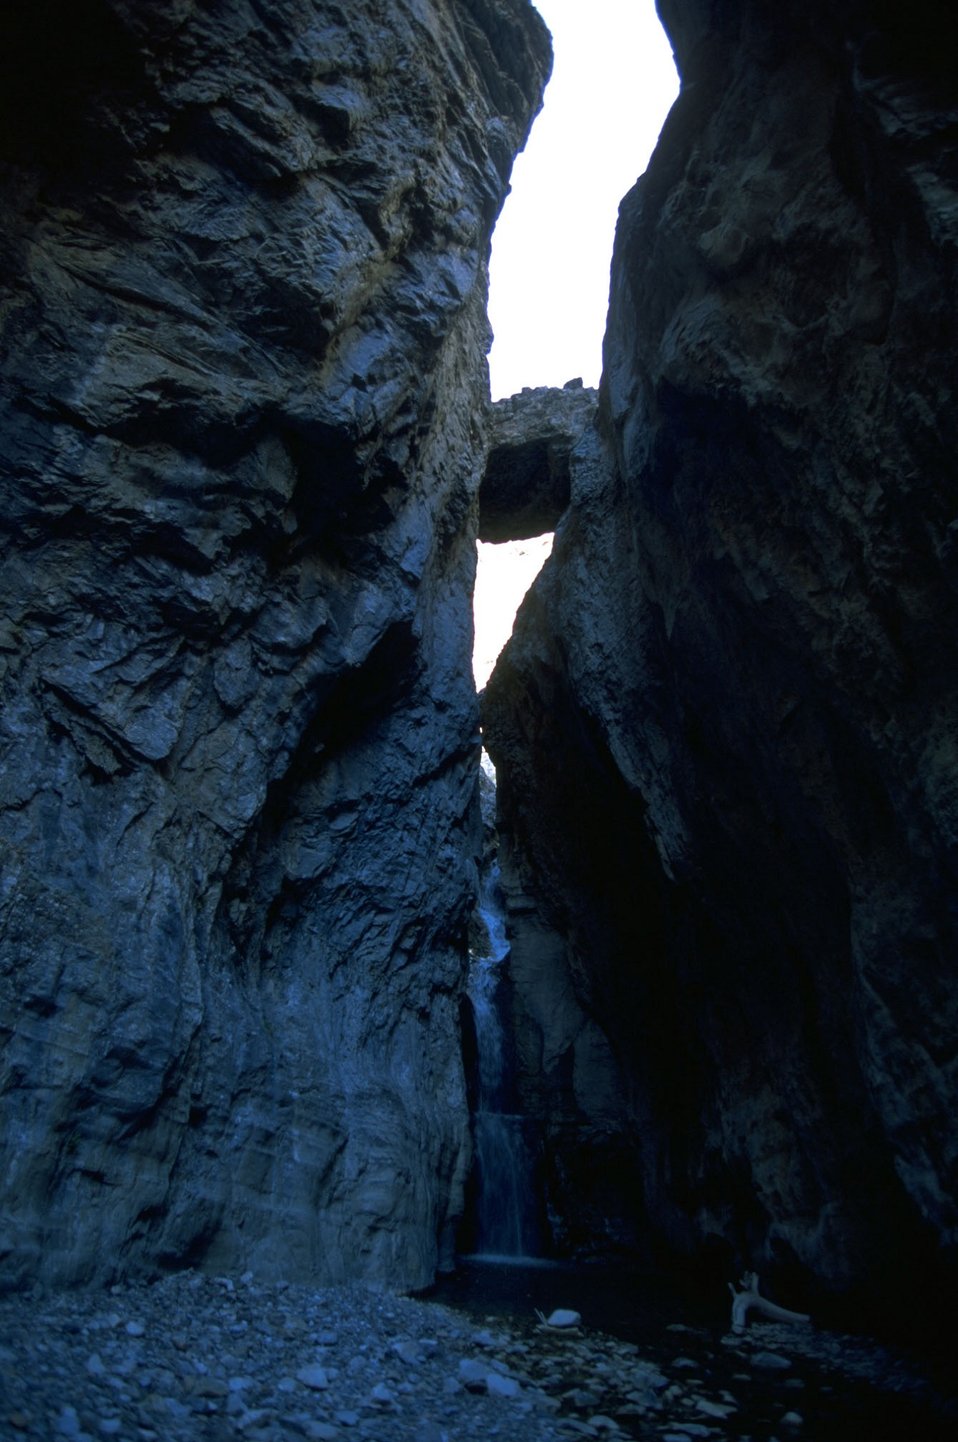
Looking west at Muddy Creek in the Rocky Mountain Front